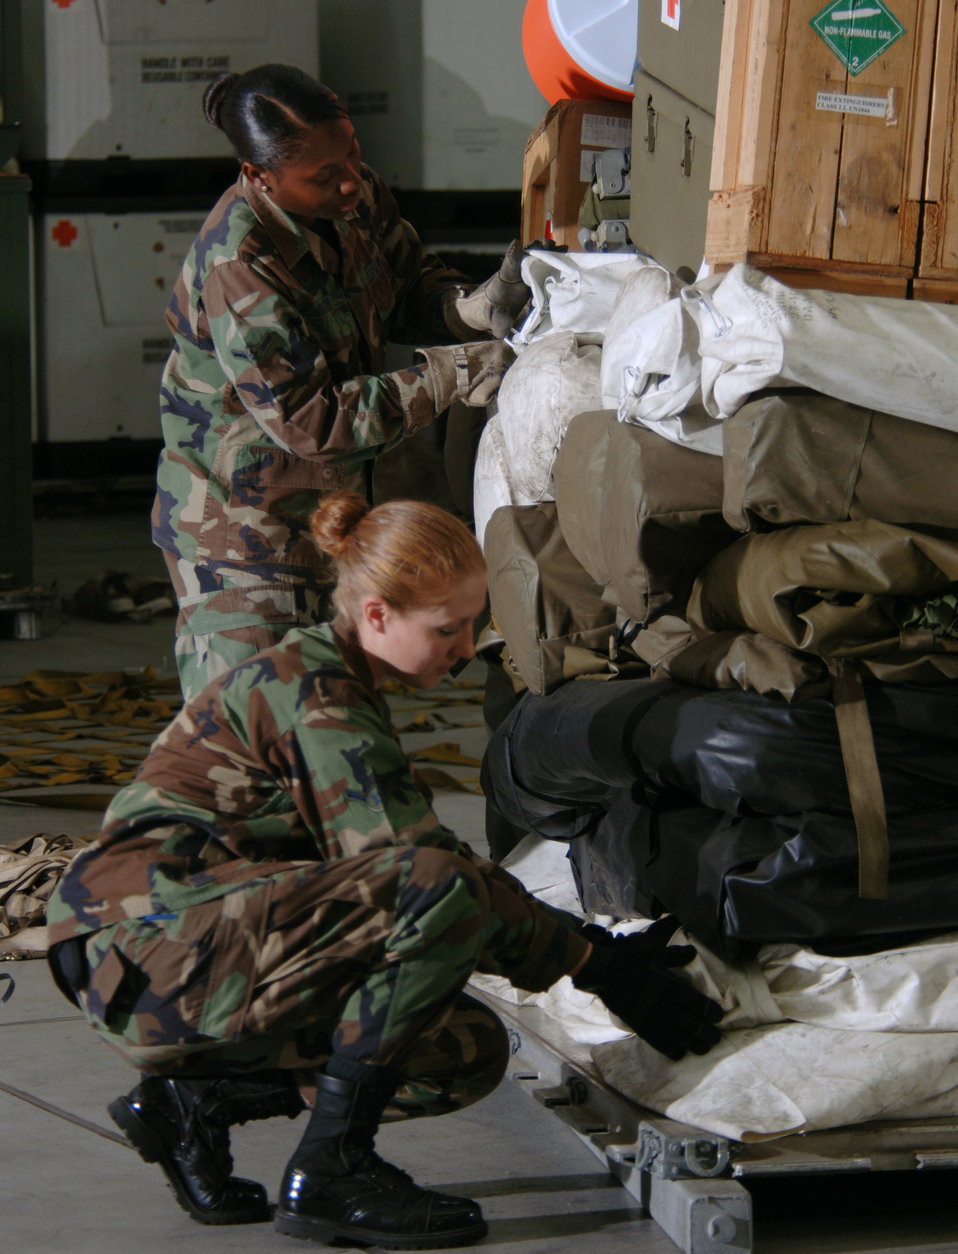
Pallet protection

YOKOTA AIR BASE, Japan -- Airmen Jessica Johnson (foreground) and Michelle Graves inventory an expeditionary medical support pallet. The 374th Medical Group logistics Airmen here handle about $24 million worth of medical war reserve materiel supplies and equipment for contingency operations.